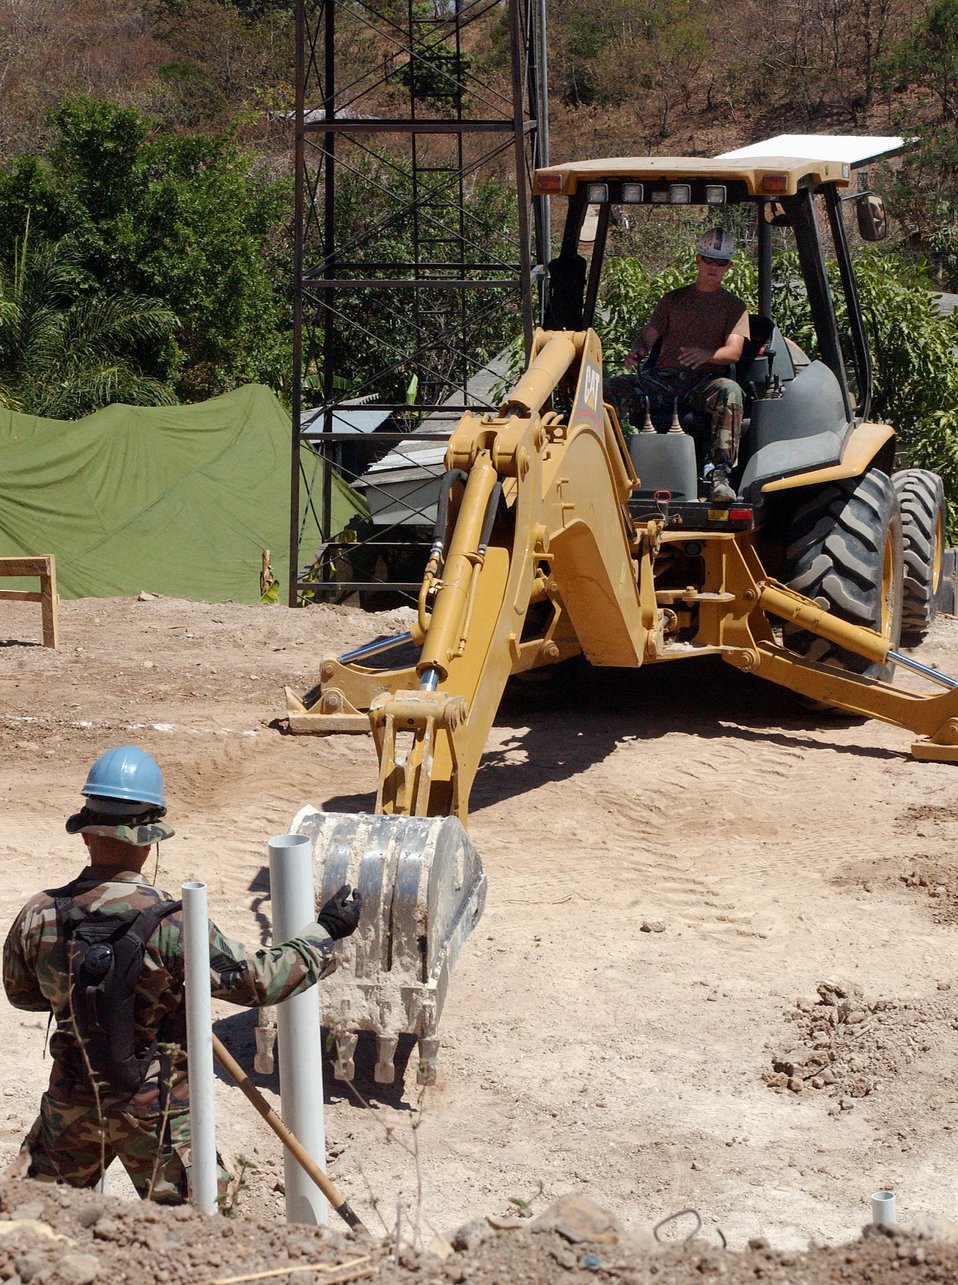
Airmen examining New Horizons

SANTA CLARA, El Salvador -- Staff Sgt. Hieu Nguyen guides Senior Airman Jesse Ray as he prepares to dig a footer for the concrete foundation of a clinic being built here. The Airmen are providing humanitarian assistance to the town people while they are deployed in support of New Horizons 2005.